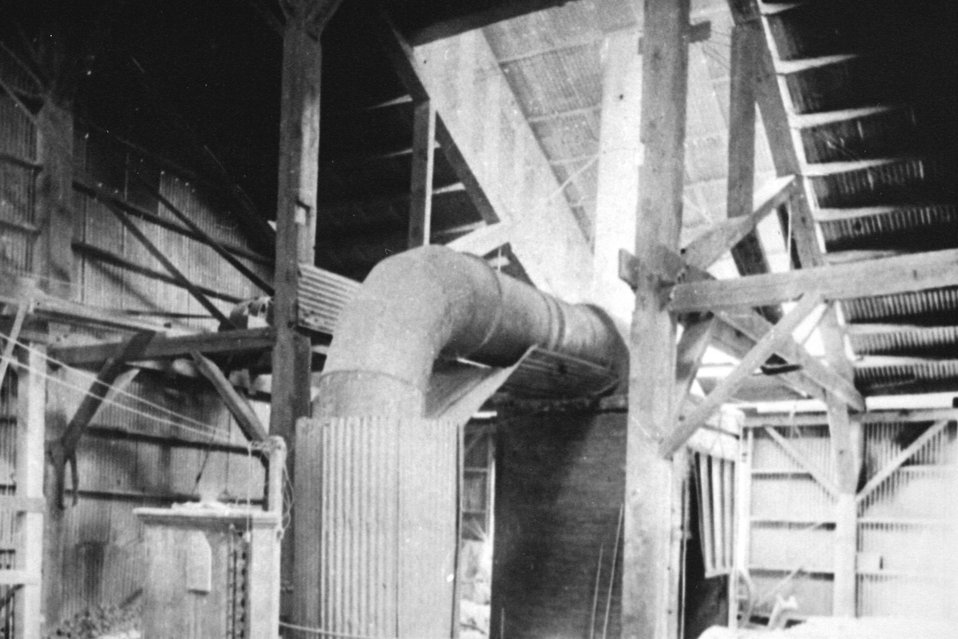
Almeda Mine